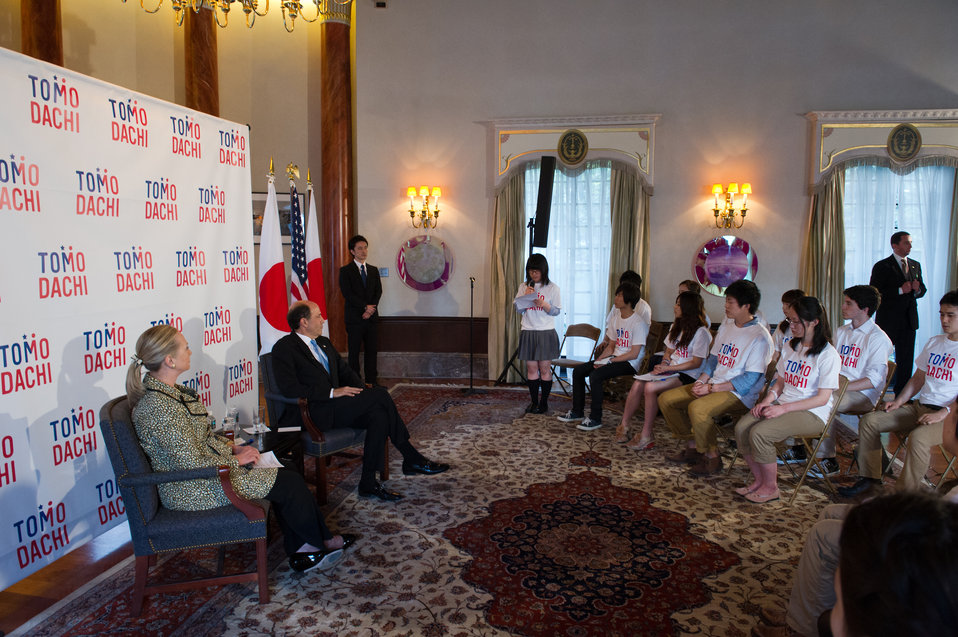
Secretary Clinton and Ambassador Roos Hold a Discussion With Tomodachi Program Youth

U.S. Secretary of State Hillary Rodham Clinton and U.S. Ambassador to Japan John Roos hold a discussion with Tomodachi program youth in Tokyo, Japan, on July 8, 2012.